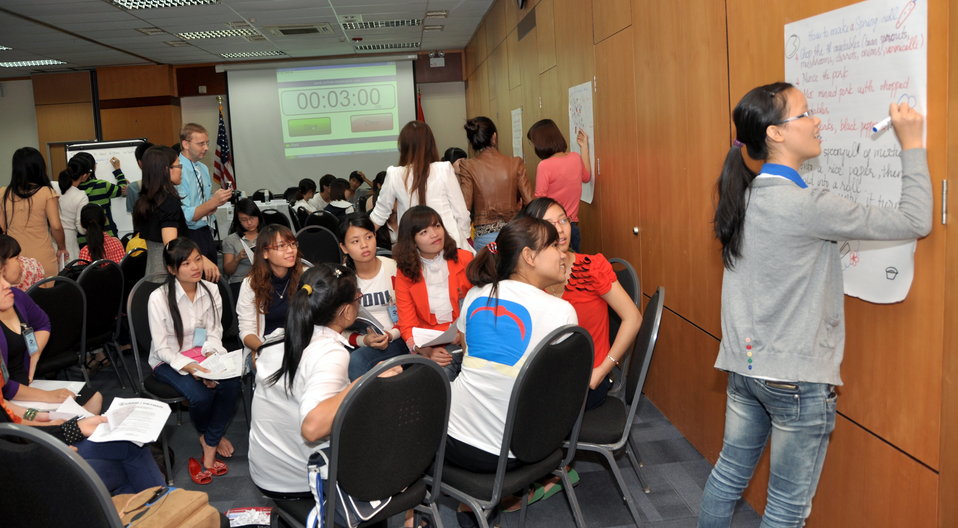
Photo: @USAIDVietnam, November 19, 2012